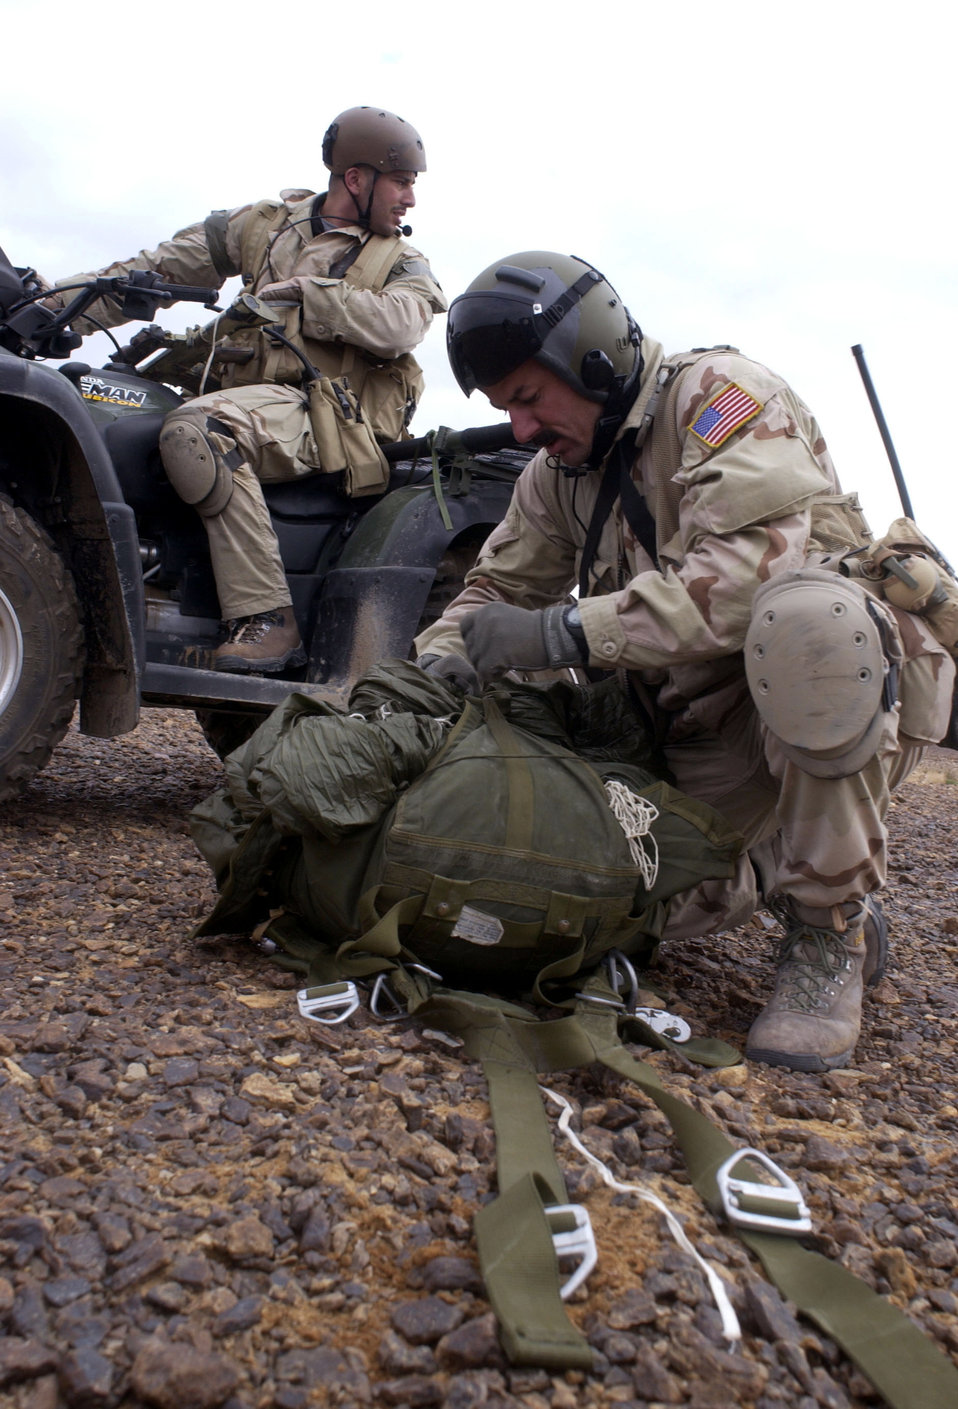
Jumping into danger

OPERATION ENDURING FREEDOM -- A pararescueman keeps an eye out while his teammate gathers equipment after parachuting 800 feet from a C-130 Hercules during a routine training exercise at a forward-deployed location. The airmen jumped along with the vehicle while practicing operations in a hostile environment.